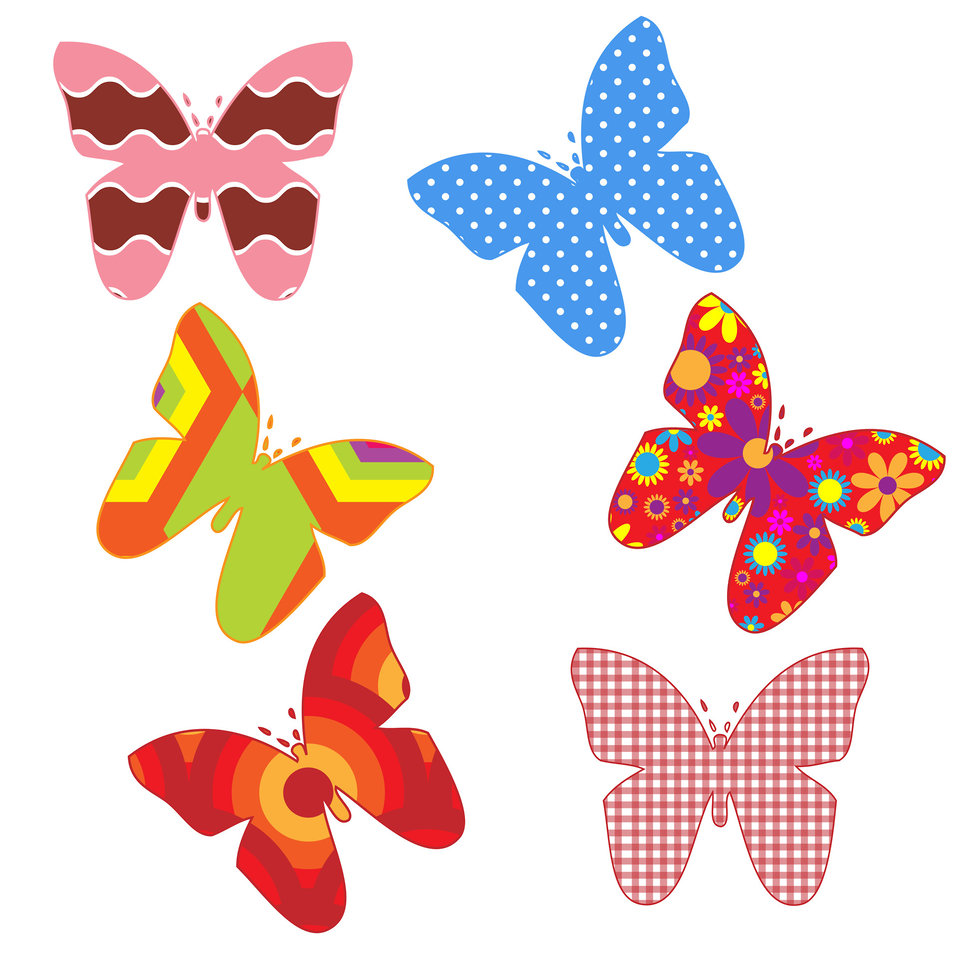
Colorful butterflies clipart

Colorful, flowery, fun, polka dots butterflies clipart.